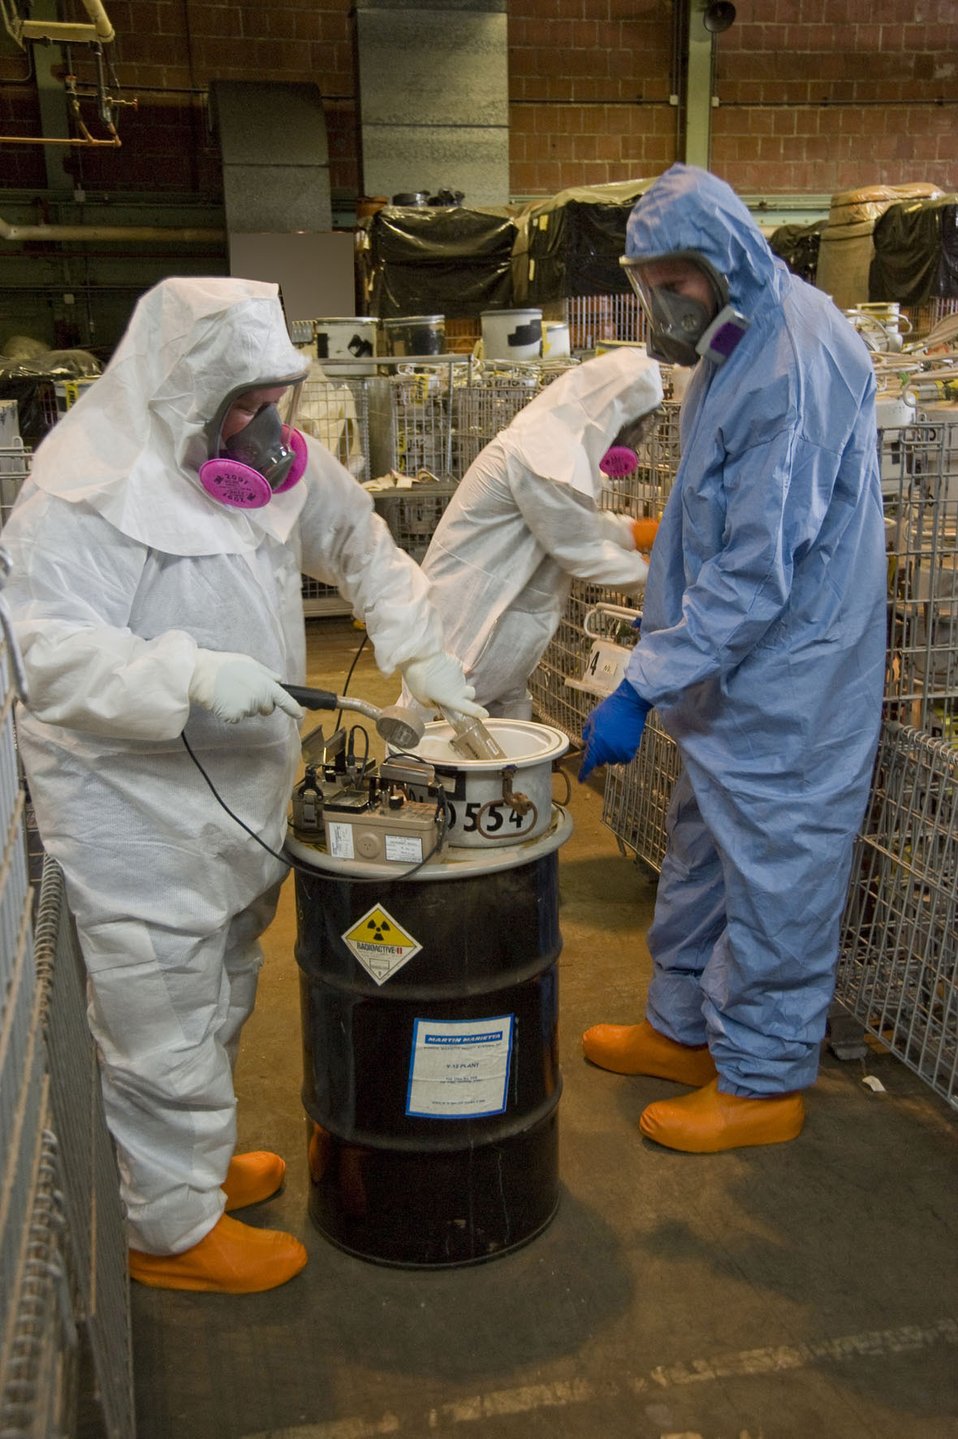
Inside Page 2 Summary